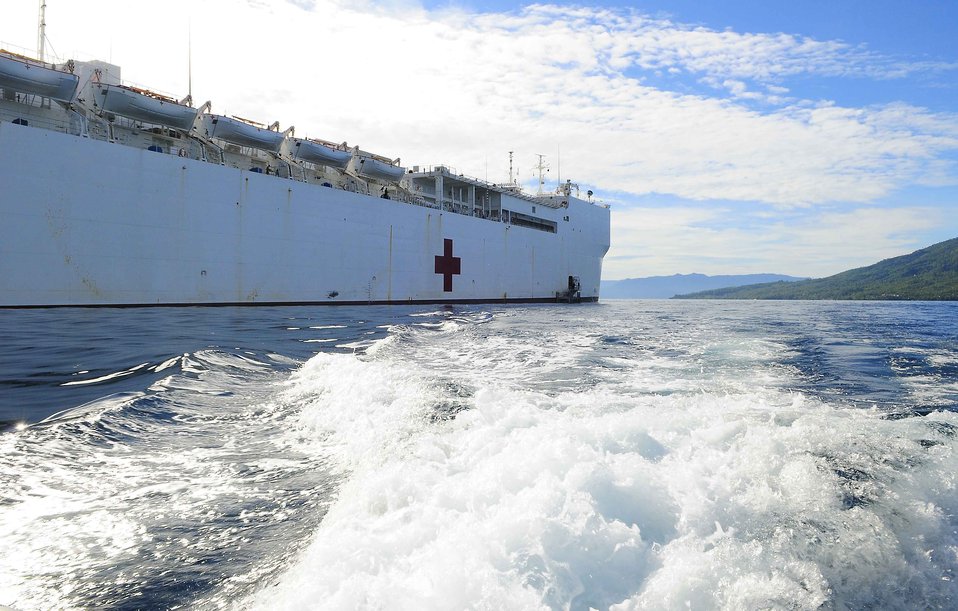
USNS Mercy Sits at Anchor Off the Coast of Ternate, Indonesia

The Military Sealift Command hospital ship USNS Mercy (T-AH 19) sits at anchor off the coast of Ternate, Indonesia, on July 20, 2010, as Pacific Partnership 2010 operations are ongoing in the area and throughout Indonesia. Pacific Partnership 2010 is the fifth in a series of annual U.S. Pacific Fleet endeavors conducted in Indonesia as a disaster relief exercise aimed at strengthening regional relationships with host and partner nations in Southeast Asia and Oceania.